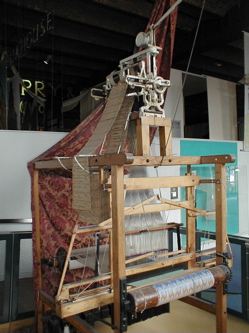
Jacquard loom on display at the Manchester museum of science and industry. Photograph taken by George H. Williams in July, 2004.